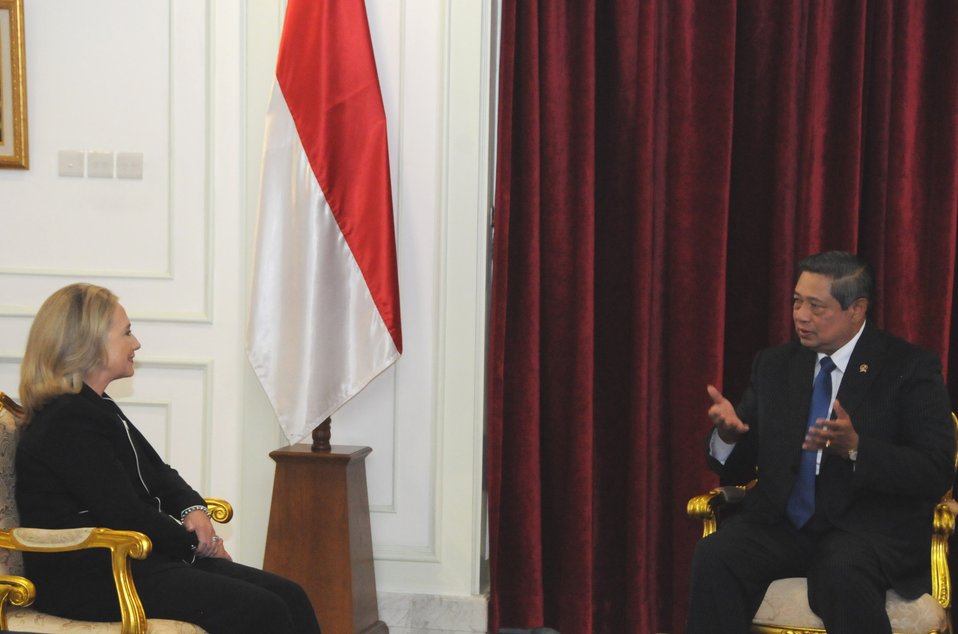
Secretary Clinton Meets With Indonesian President Yudhoyono

U.S. Secretary of State Hillary Rodham Clinton meets with Indonesian President Susilo Bambang Yudhoyono in Jakarta, Indonesia, September 4, 2012.